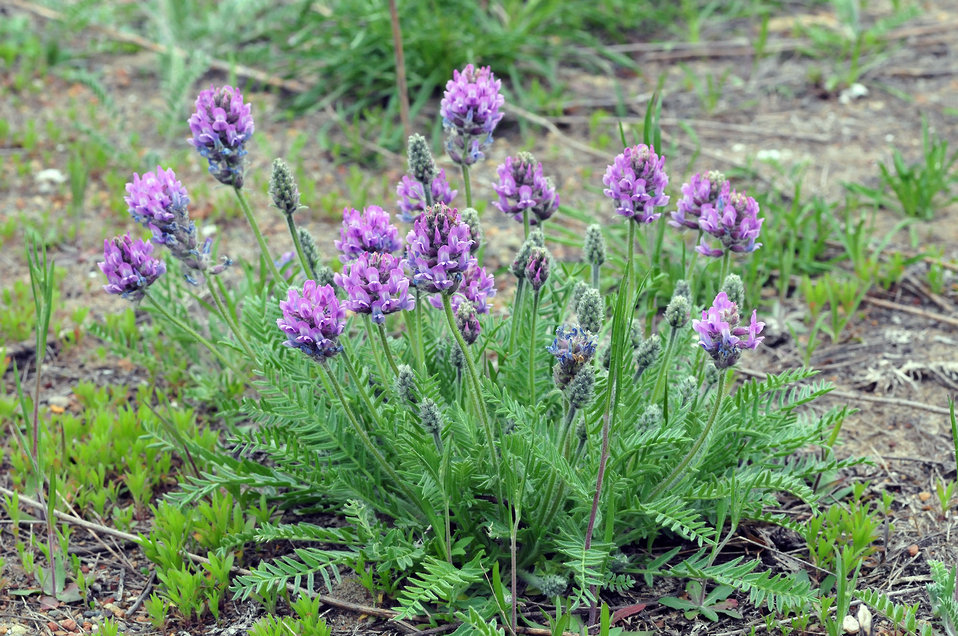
Fassett's Locoweed by USFWS; Joel Trick

Fassett's locoweed, a federally threatened plant, is endemic to Wisconsin. Photo by USFWS; Joel Trick